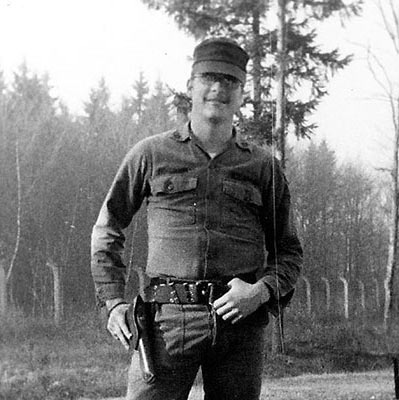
Mark Hogeboom-Midwest Region

Mark Hogeboom, a writer/editor for the Midwest Region, spent time in the military.